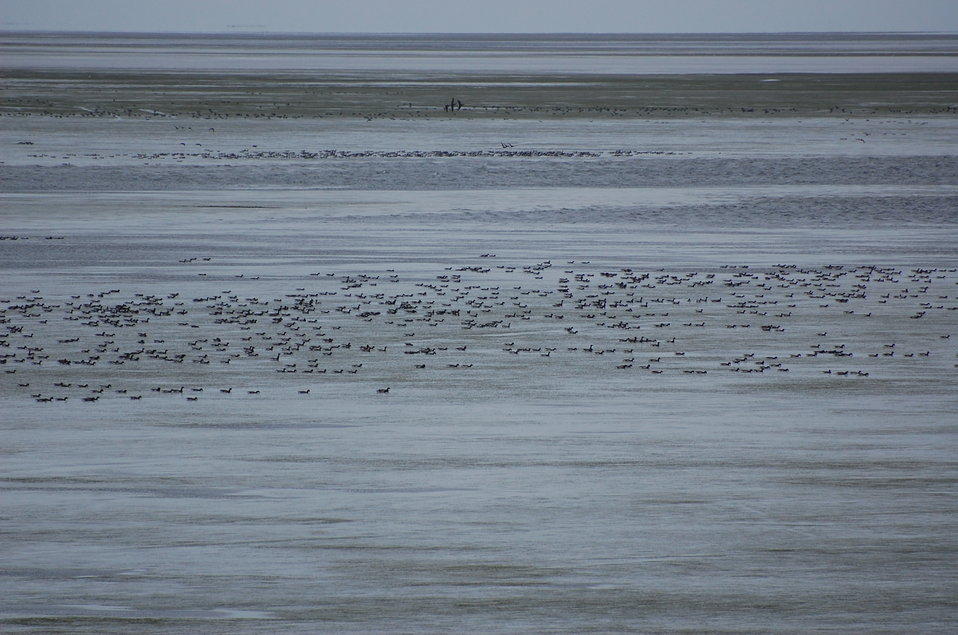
Brant at Izembek Lagoon

Izembek National Wildlife Refuge